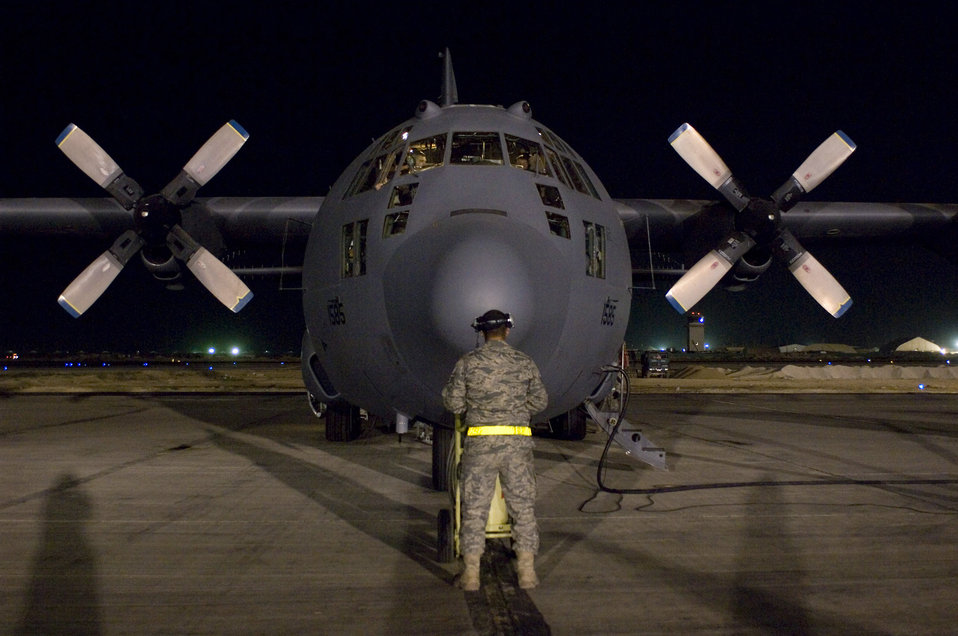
EC-130 squadron surpasses 10,000 combat hours

Staff Sgt. Alex Rosales prepares to launch an EC-130H Compass Call Oct. 6 at Bagram Airfield, Afghanistan. It took 80,000 maintenance hours to help the 41st Expeditionary Electronic Attack Squadron members to fly more than 10,000 combat hours in support of Operation Enduring Freedom. Sergeant Rosales is a crew chief for the 41st Expeditionary Electronic Attack Squadron.